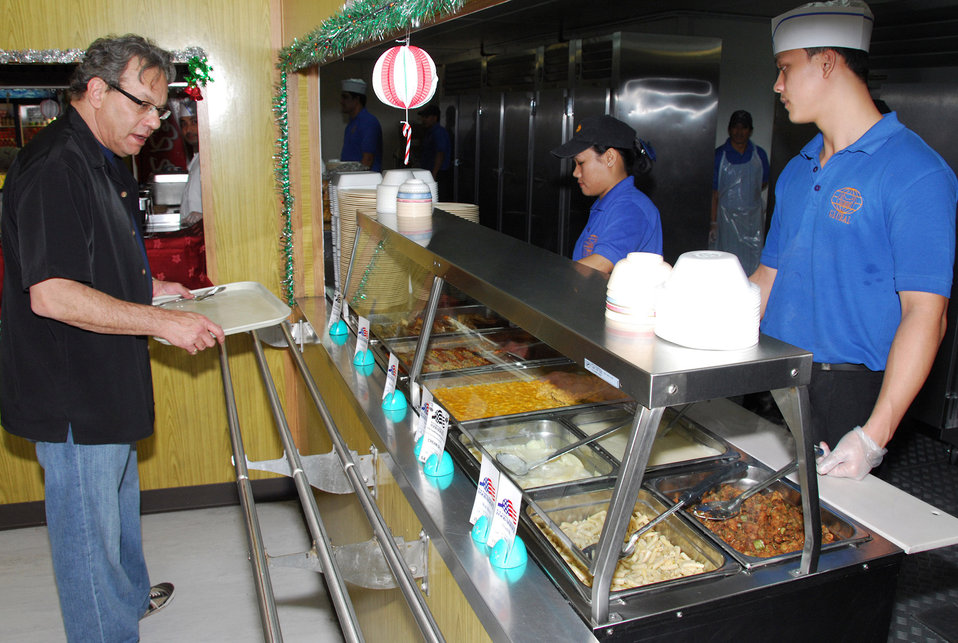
USO group visits servicemembers in Southwest Asia

Lewis Black mulls a dining choice at the Independence Dining Facility Dec. 17 at a Southwest Asia air base. Mr. Black is one of the celebrities touring with the United Service Organizations 2007 holiday show.